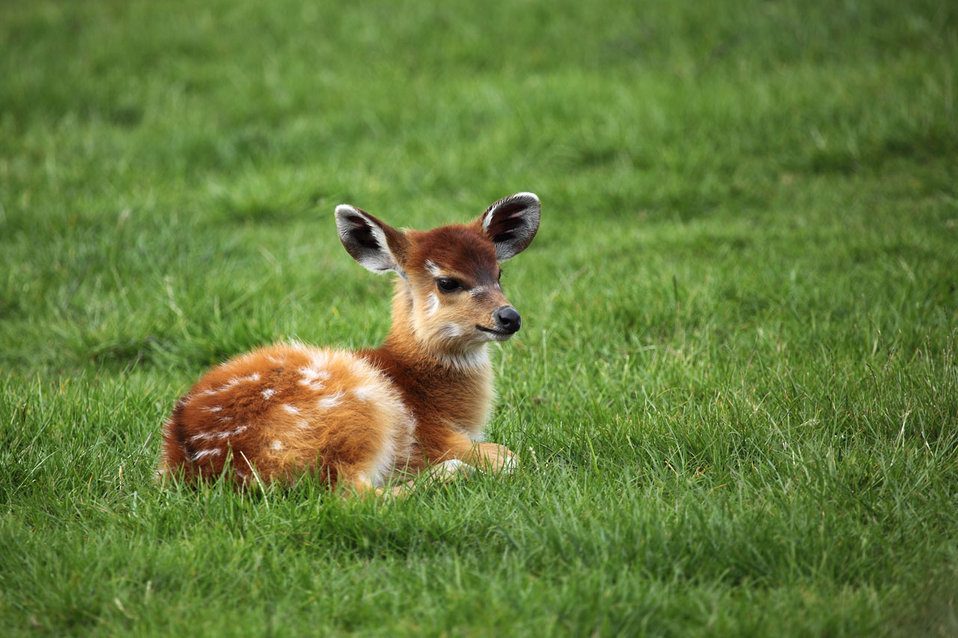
Baby antelope

Baby sitatunga lying on fresh green grass.